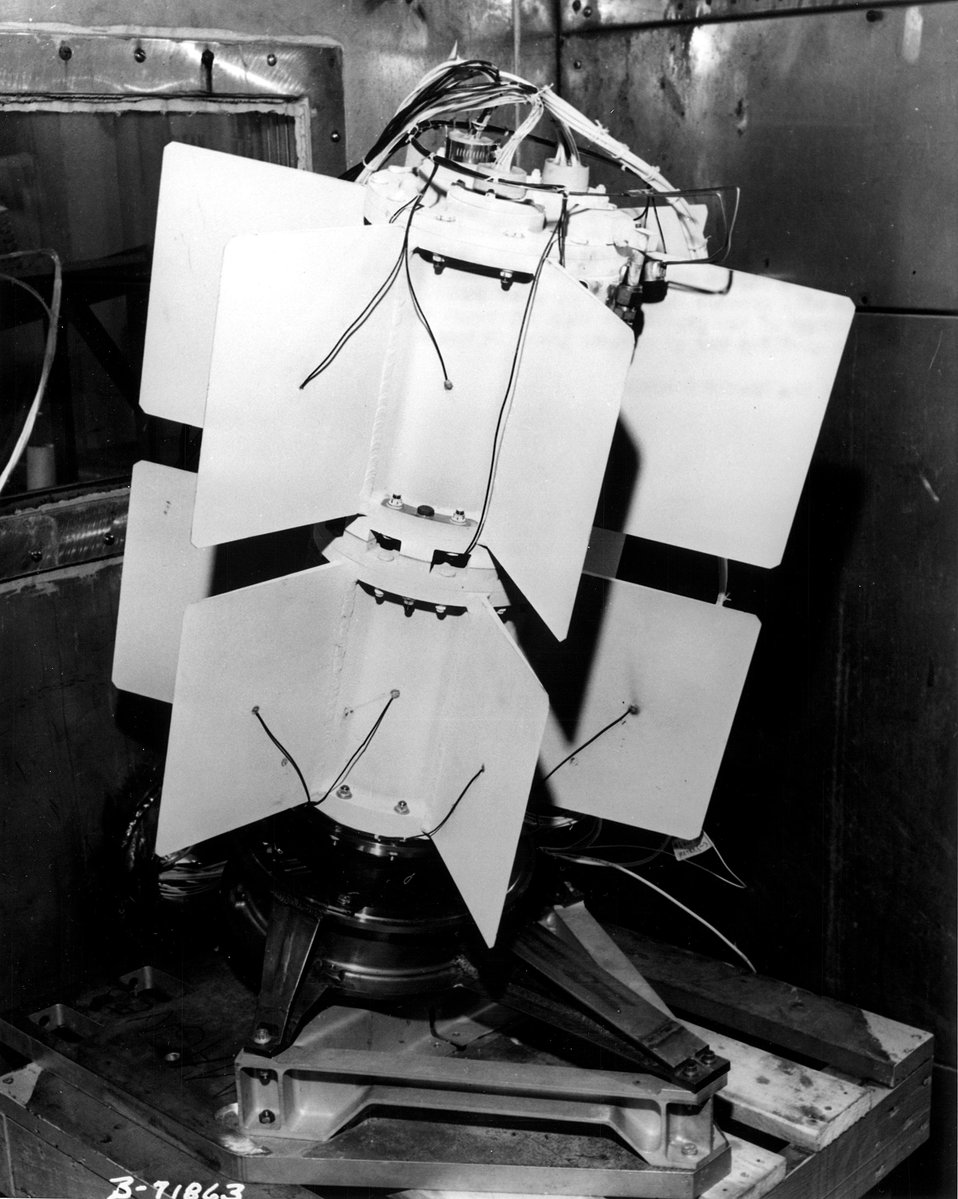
Space Atomic Batteries... Two atomic batteries of this type, developed by the Atomic Energy Commission, will provide about 50 watts of electrical power to a NASA Nimbus weather satellite to be launched in early 1968.